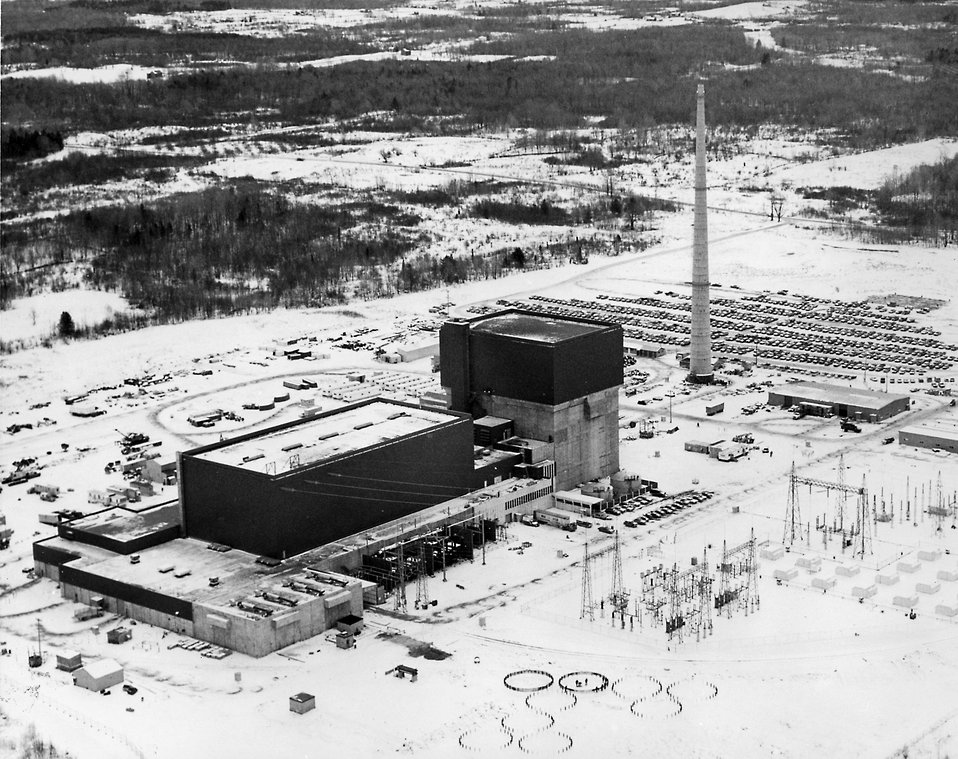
The 821,000- Kilowatt FitzPatrick Nuclear Power Plant on the shore of Lake Ontario in the Town of Scriba near Oswego is scheduled for completion in 1973. The New York State Power Authority reports that the plant is 80 percent completed at the time this photograph was made. Circa 1973.